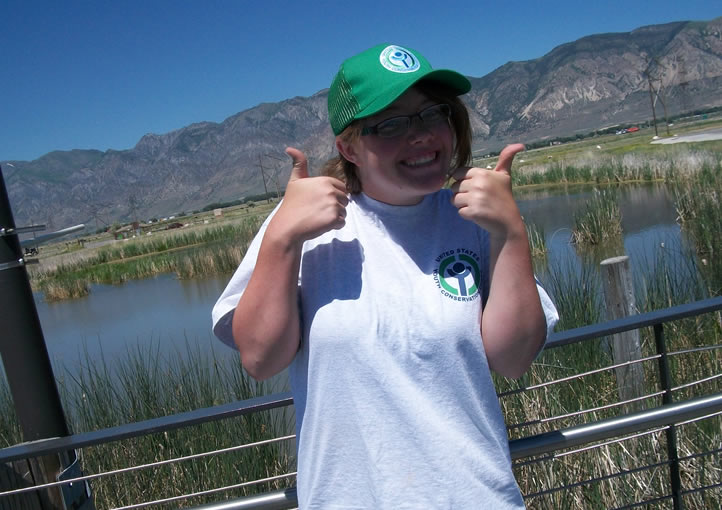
Youth Conservation Corps Spirit

Youth Conservation Corps participant gives two thumbs up for Bear River Migratory Bird Refuge.